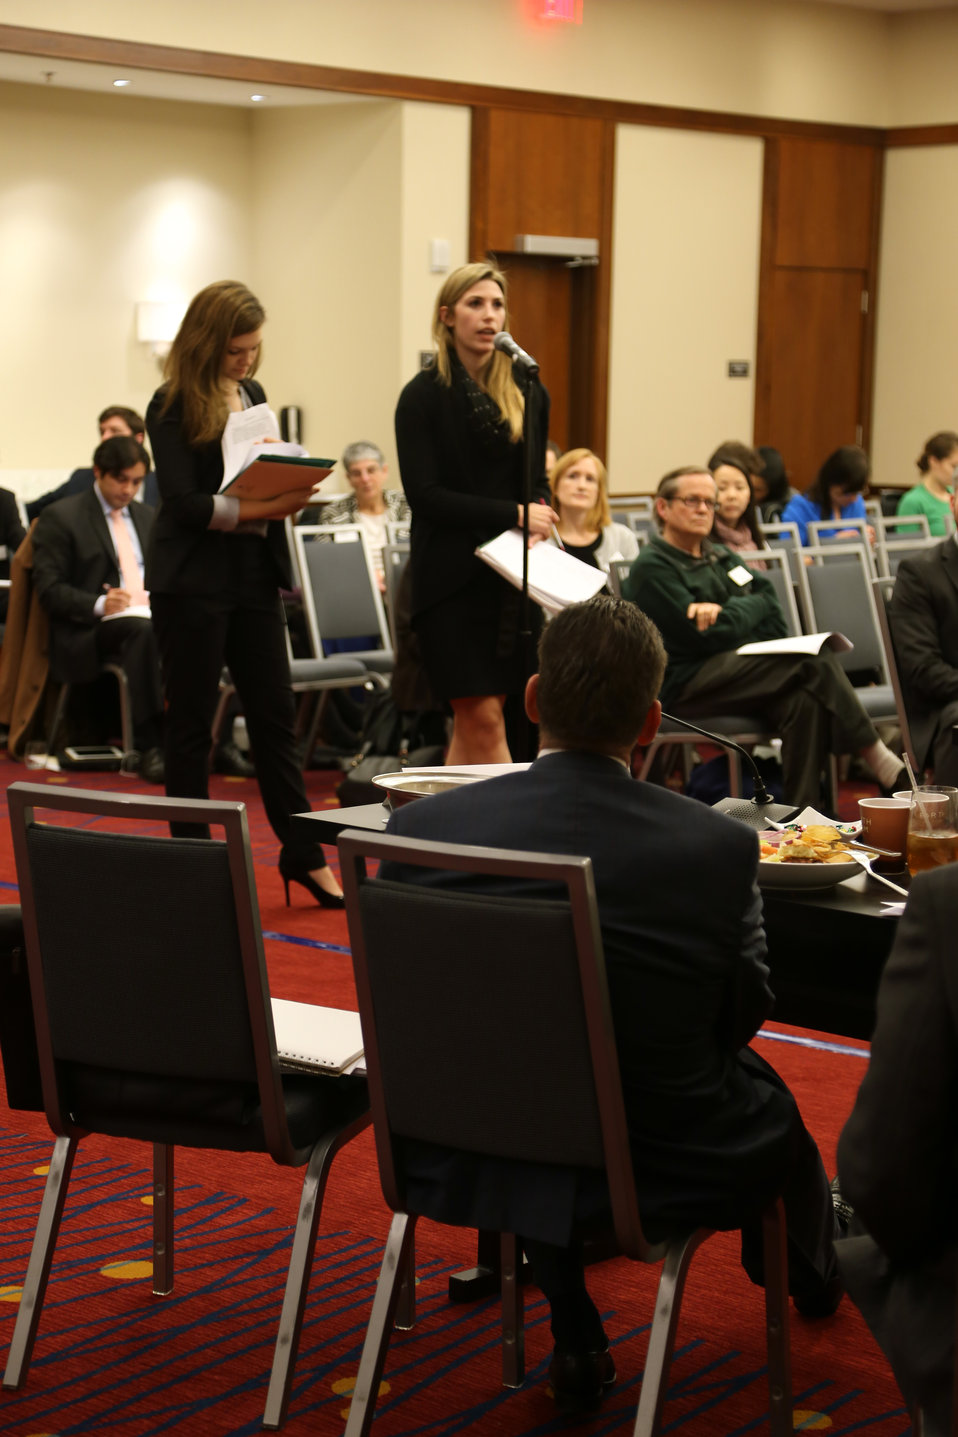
Wildlife Trafficking Advisory Council Meeting March 20, 2014